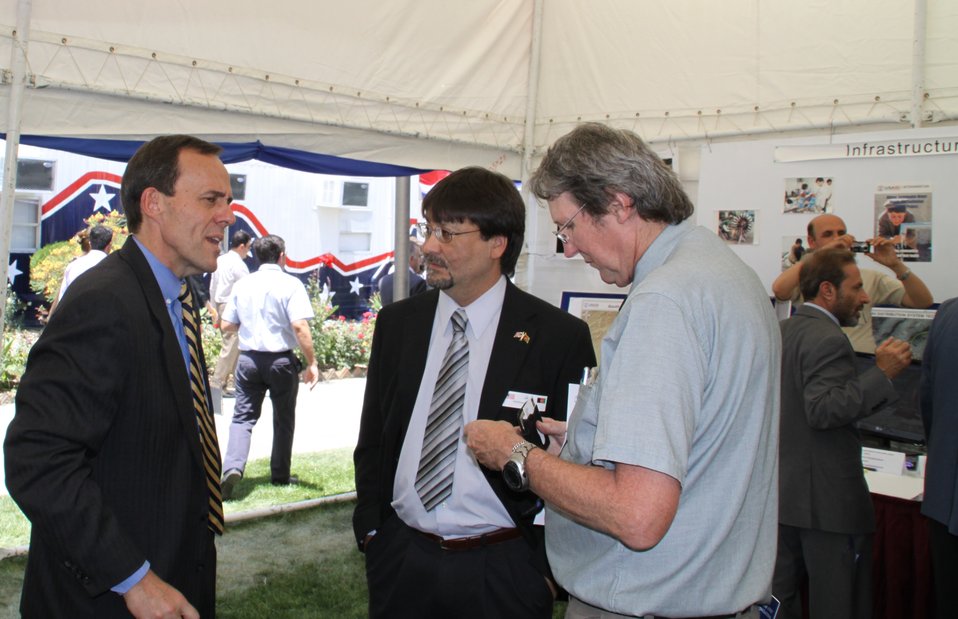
Kabul Official July 4th Celebration